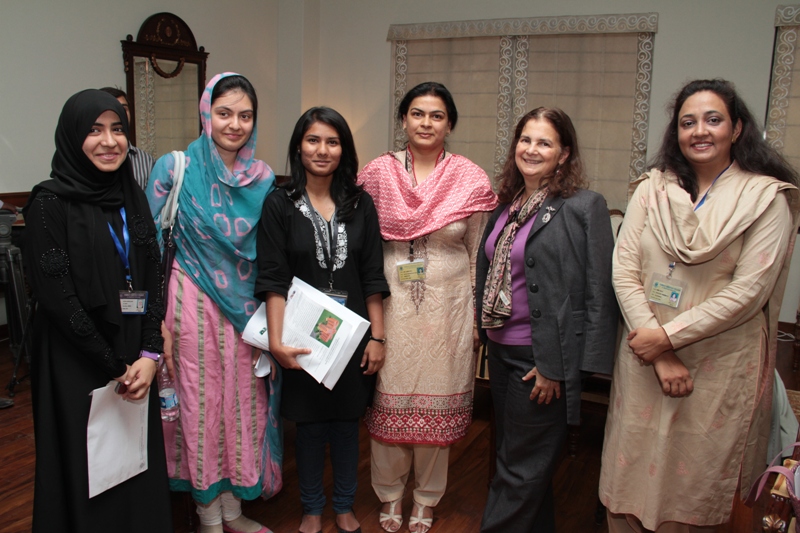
U.S. Consul General Nina Fite with FCC students and teachers.